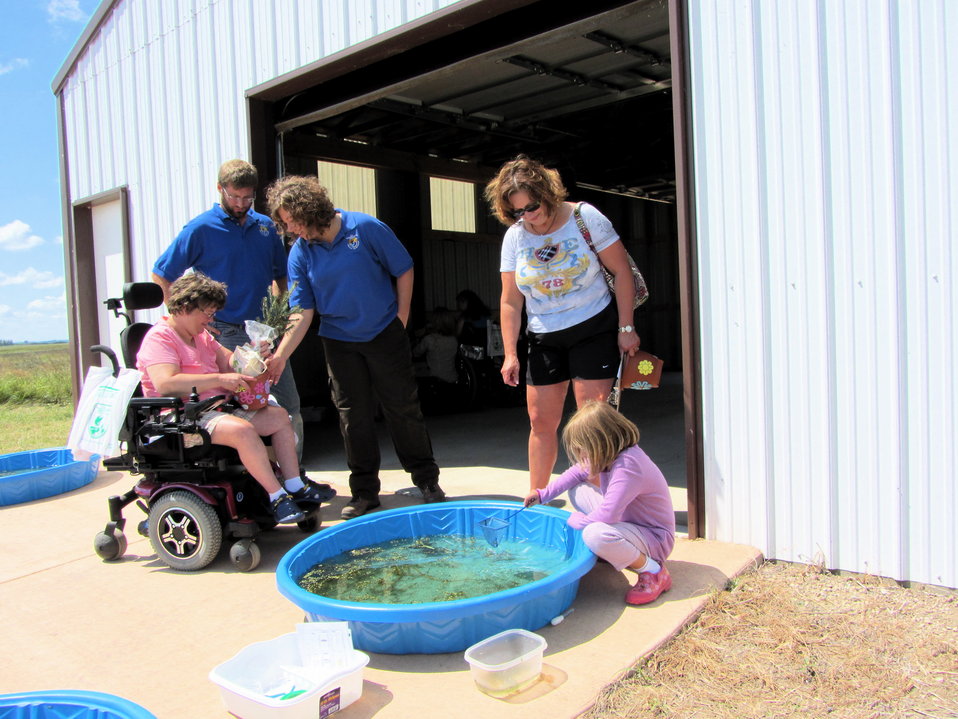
2011 Huron Prairie Fest

'Explore a Wetland'